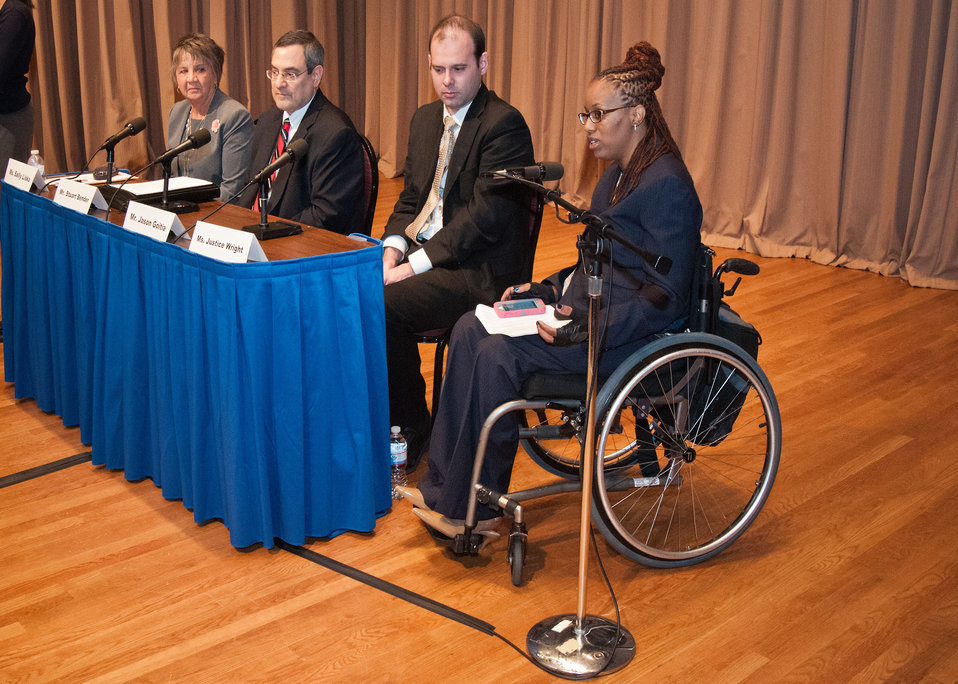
(L to R) U.S. Department of Agriculture (USDA) Office of the Executive Secretariat employee Sally Liska, USDA Office of Ethics employee Stuart Bender, USDA Office of Ethics employee Jason Goitia, and USDA Office of Communications employee Justice Wright sit on the panel ‘Hiring and Employing Individuals with Disabilities at the USDA 2012 National Disability Employment Awareness Month celebration in the Jefferson Auditorium at USDA in Washington, D.C. on Wednesday, Oct. 17, 2012. The theme for the event was, “A Strong Workforce is an Inclusive Workforce: What Can You Do?